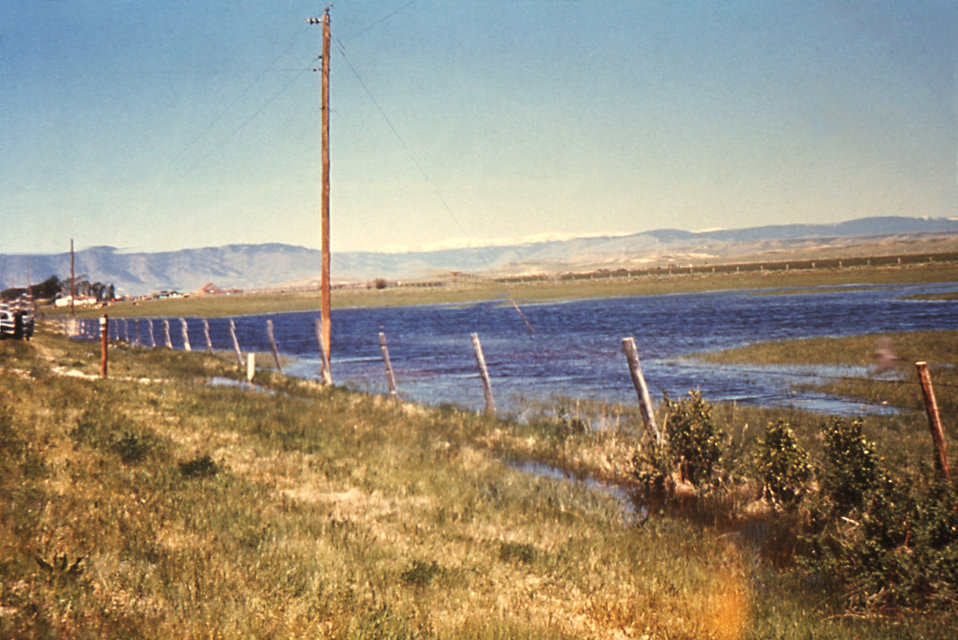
This image depicts the pooling of irrigation 'tailwater' at the edge of a Wyoming pasture.